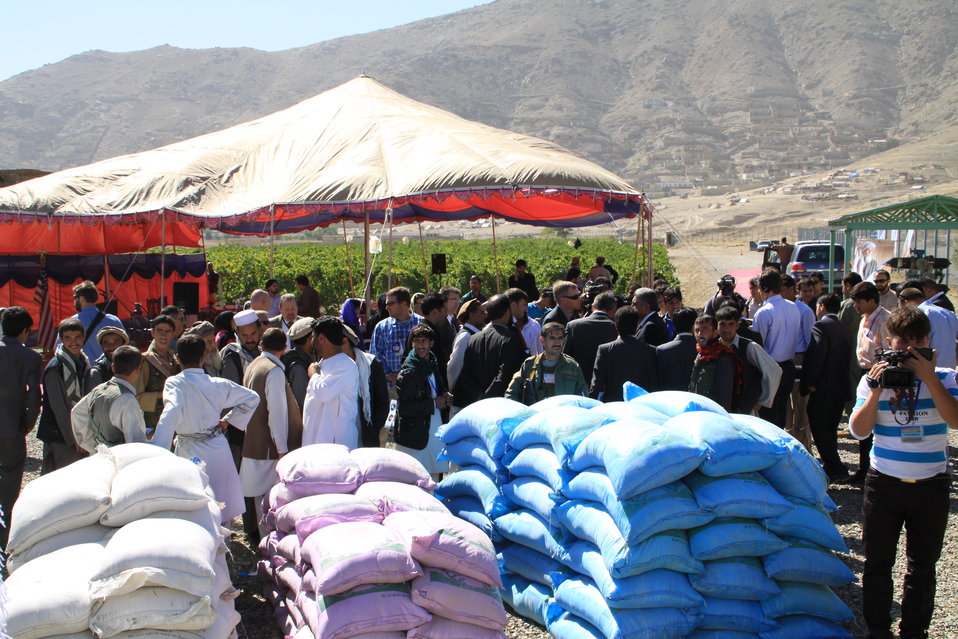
AVIPA Plus Wheat Seed Distribution 101005

US Ambassador Karl Eikenberry and USAID Acting Mission Director Kevin Brownawell joined the Minister of Agriculture, Irrigation and Livestock, H.E. Minister Mohammed Rahimi in signing a Memorandum of Understanding and distributing vouchers to area farmers for wheat and fertilizer.

US Ambassador Karl Eikenberry and USAID Acting Mission Director Kevin Brownawell joined the Minister of Agriculture, Irrigation and Livestock, H.E. Minister Mohammed Rahimi in signing a Memorandum of Understanding and distributing vouchers to area farmers for wheat and fertilizer.

US Ambassador Karl Eikenberry and USAID Acting Mission Director Kevin Brownawell joined the Minister of Agriculture, Irrigation and Livestock, H.E. Minister Mohammed Rahimi in signing a Memorandum of Understanding and distributing vouchers to area farmers for wheat and fertilizer.